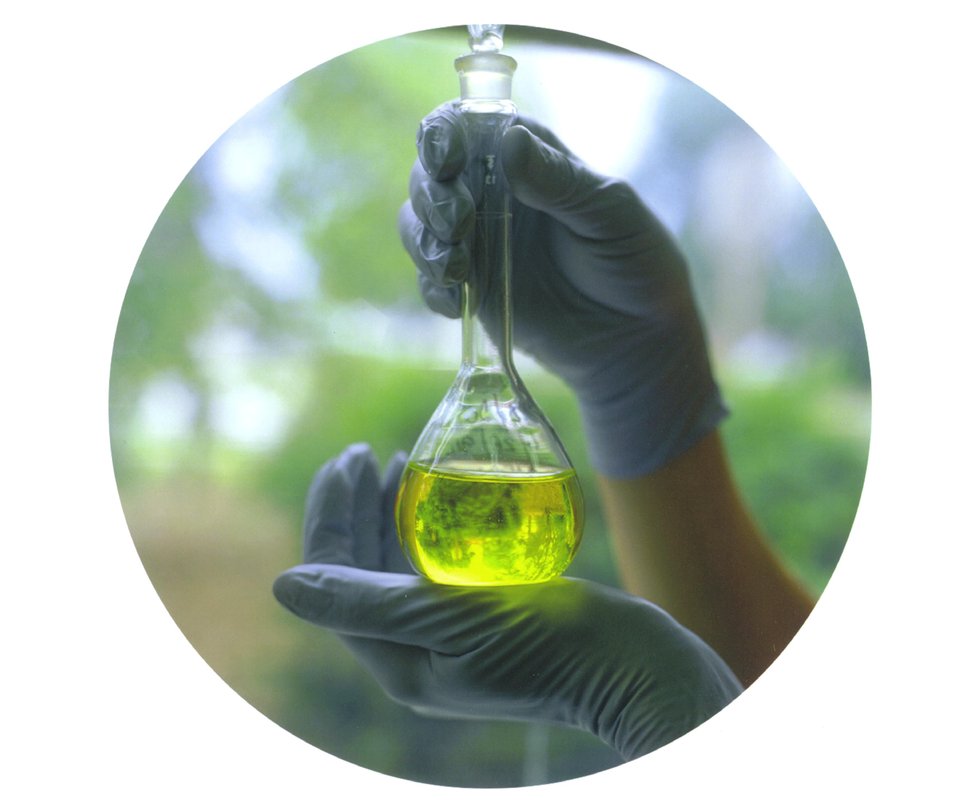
AMES LAB SCIENTISTS ARE STUDYING THE EFFECTS OF LIGHT ON CHEMICAL REACTIONS.

AMES LAB IS INVESTIGATING THE USE OF VISIBLE LIGHT TO DRIVE CERTAIN CHEMICAL REACTIONS. IN SOME EXPERIMENTS, EXCITED URANIUM IS USED AS A PHOTO SENSITIZER, ABSORBING VISIBLE LIGHT TO DRIVE THE PARTIAL OXIDATION OF SATURATED HYDROCARBONS.